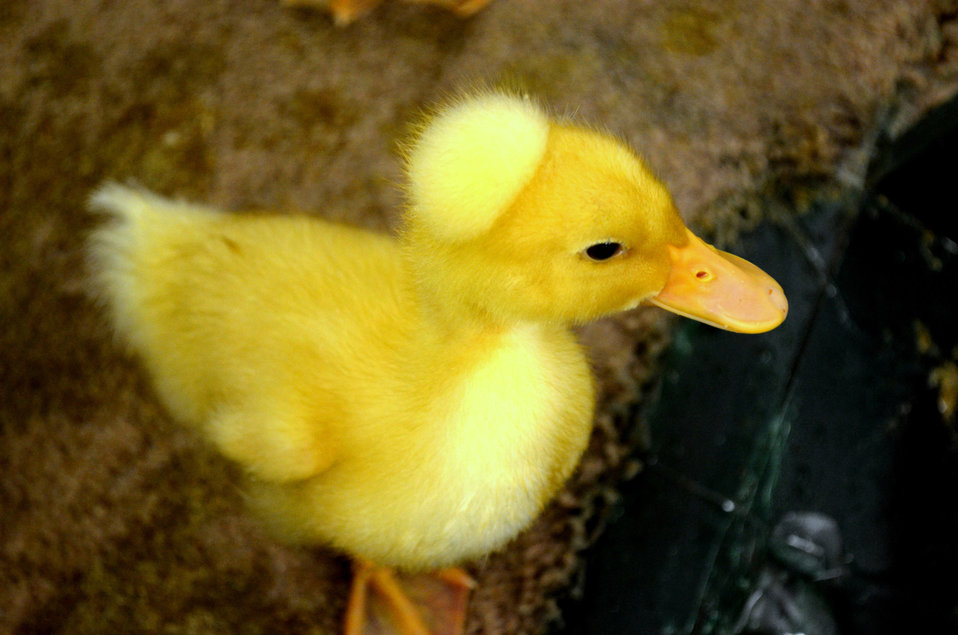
Duckling

A newly hatched duck.